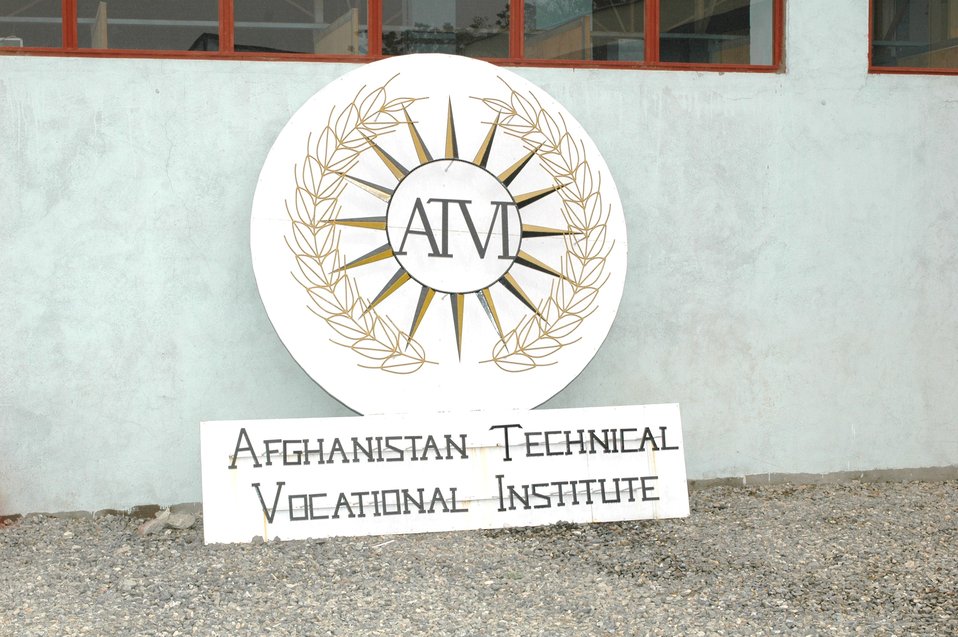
Dr Shah Visits Votech in Kabul